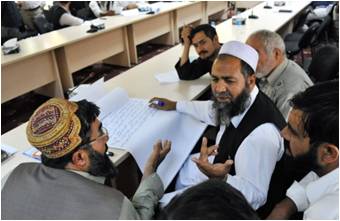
Meeting Afghanistan’s Power Needs

In Afghanistan, serious power shortages have prompted a return to traditional biomass and imported hydrocarbon fuels for lighting, cooking and heating. Restoration and upgrading of micro hydropower plants seems to be a better solution. However, there is a lack of quality turbine manufacturing capacity and qualified experts needed to achieve this. Recently, the Ministry of Rural Rehabilitation and Development (MRRD) supported by the USAID’s Afghanistan Clean Energy Program (ACEP) held a workshop for Afghan turbine manufacturers to identify and address key challenges and constraints faced in this sector.

“Afghans should benefit from quality products, which impact living conditions,” said Wais Ahmad Barmak, Deputy Minister of MRRD. “We need a plan to identify the capacities, strengths, and gaps in this sector to decide the best next steps.”

The National Solidarity Program, Energy for Rural Development of Afghanistan and ACEP delivered presentations covering the role of the private sector as a service provider for micro hydropower plants, production of various turbines for use in Afghanistan, and the hydropower engineering experience in Nepal, whose geography is similar to Afghanistan.

After the presentations, participants discussed their needs and priorities, barriers to improving the capacity of turbine production, and their expectations, which included on-the-job training on the construction of advanced turbine models.

A major workshop highlight was the expressed desire by participants to form a turbine manufacturing association, which could serve as a forum to pose questions and voice pressing issues and to seek advice and training opportunities.

“The workshop was a very good opportunity to hear from others,’ said Mohammad Hamini, a cross-flow turbine manufacturer from Herat province. “If we have more of these kinds of workshops, it will be very beneficial to our work and we will be most grateful.”